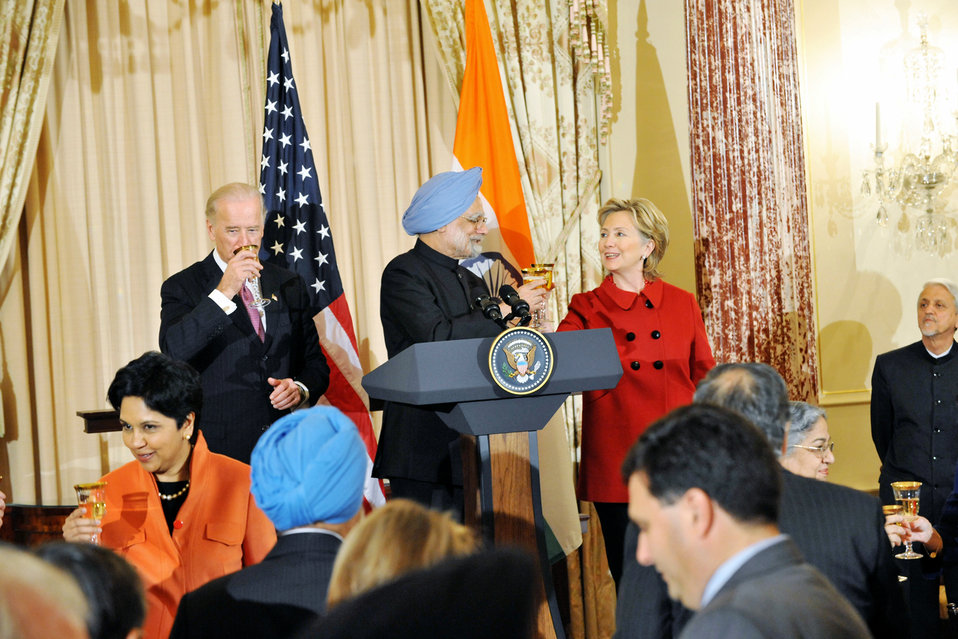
Vice-President Biden, Secretary Clinton Co-Host Social Lunch in Honor of Indian Prime Minister

U.S. Vice-President Joe Biden Dr. Jill Biden co-host a social lunch with U.S. Secretary of State Hillary Rodham Clinton in honor of Indian Prime Minister H.E. Dr. Manmohan Singh and Dr. Gurusharan Kaur at the U.S. Department of State in Washington, DC November 24, 2009.